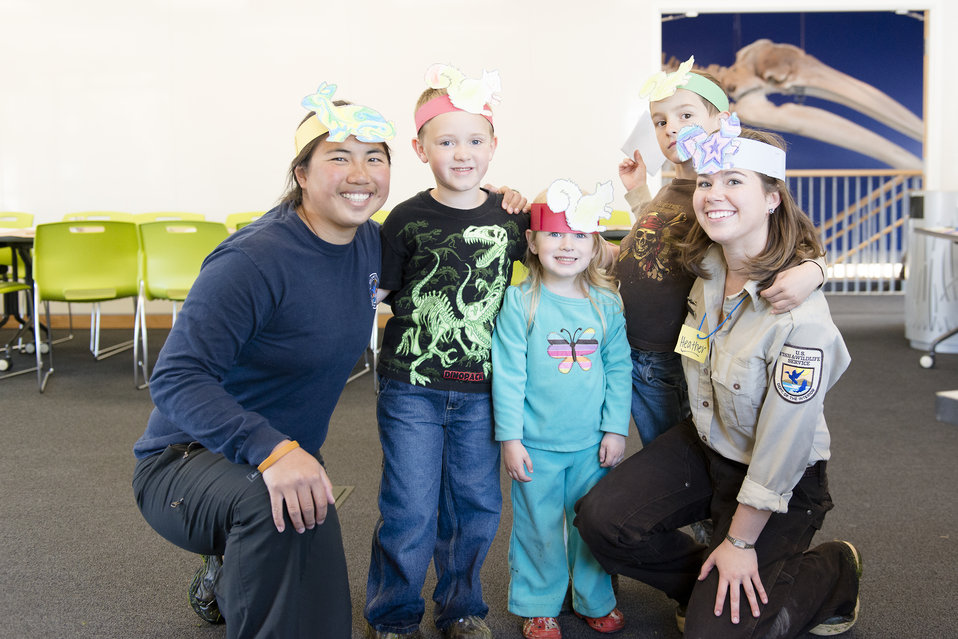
CDIP Volunteer Helen with Ranger Heather at the FUN program

Photo Credit: Sylwia Ok/USFWS
Source: Kodiak NWR